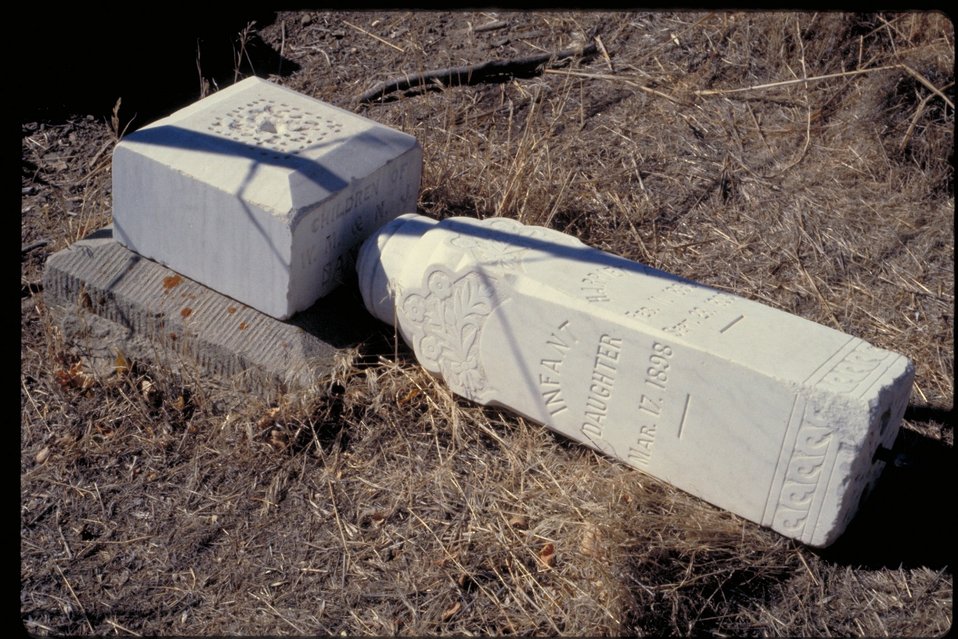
Cemetery at Canyon Creek Stage Station Oregon Trail Lower Snake River District